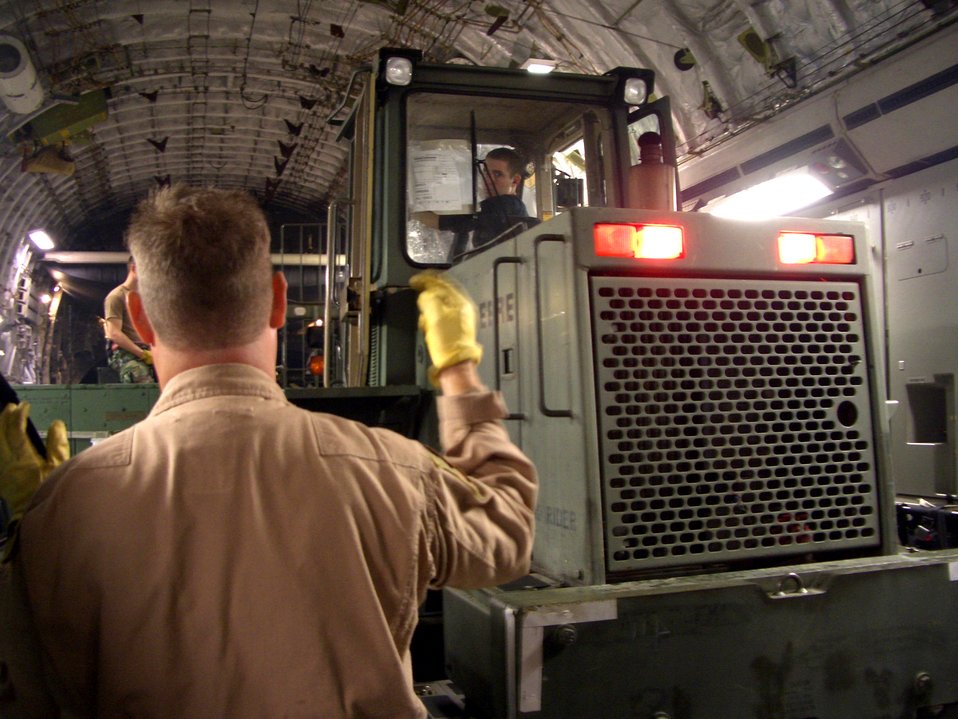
AMC assists earthquake response

MCGUIRE AIR FORCE BASE, N.J. -- Staff Sgt. Terry Owens helps Senior Airman Drew Dentinger loads a 10K all-terrain forklift onto a C-17 Globemaster III. On Oct. 10, the aircraft left here to deliver 52.4 tons of support equipment to Pakistan in response to earthquake relief operations. The aircraft was one of two C-17s that flew 45 members of the 621st Contingency Response Wing to the country. Both Airmen are with the 305th Aerial Port Squadron here.